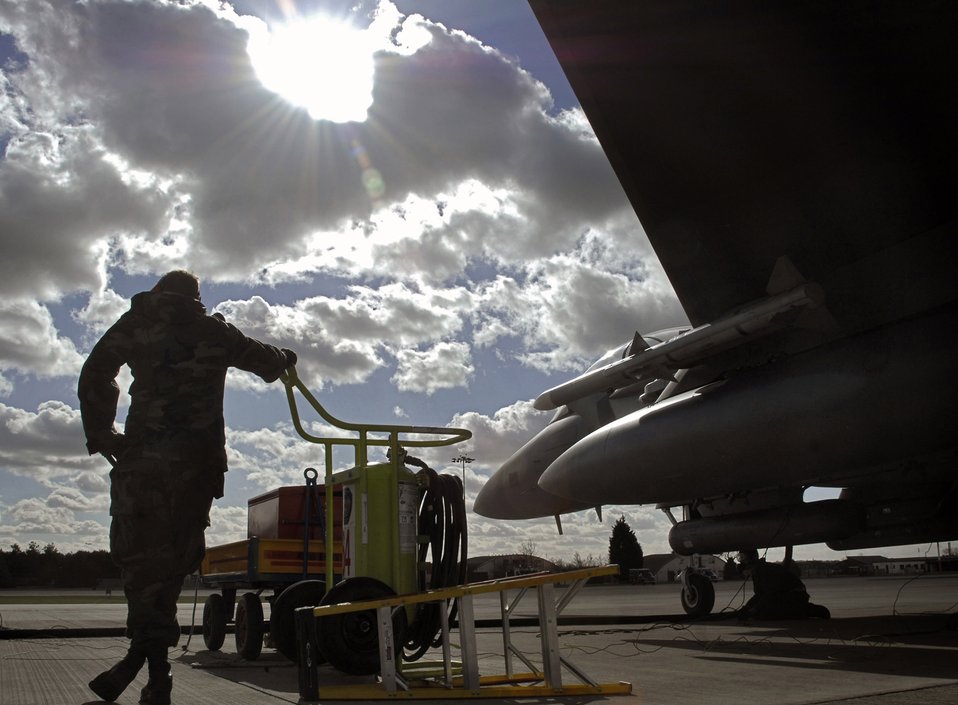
I've been waiting ...

Airman 1st Class David Cooper waits to pull tire chocks as an F-15E Strike Eagle is refueled in the hot pit March 3 at Royal Air Force Lakenheath, England. To minimize ground time, crews regularly perform